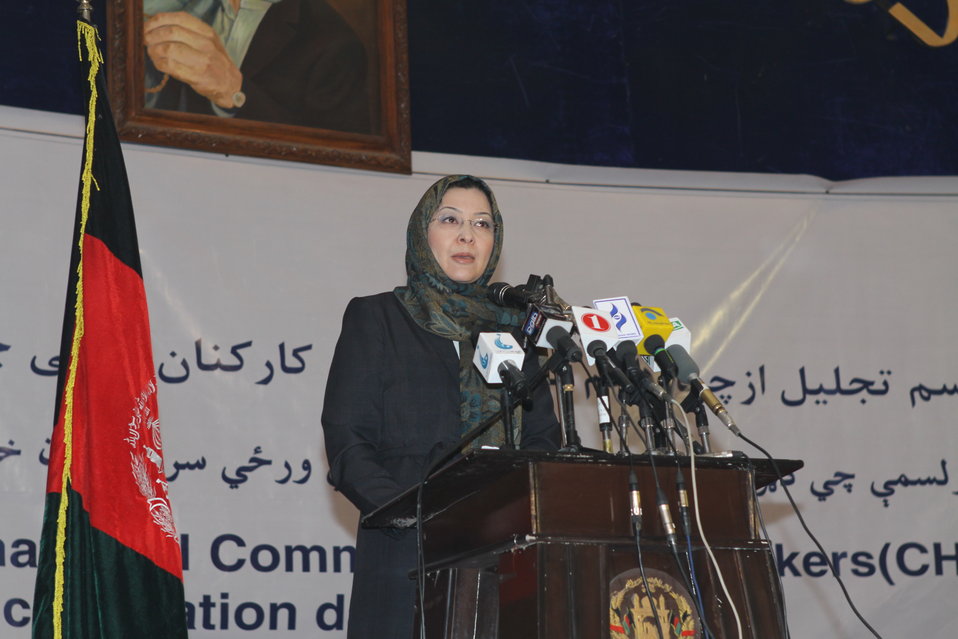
Community Health Workers Celebrated

Kabul, Afghanistan | December 5, 2010 — In support of the United Nations designated International Volunteer Day for Economic and Social Development, Afghanistan’s Ministry of Public Health celebrated its annual Community Health Worker Day today. Acting Minister of Public Health Dr. Suraya Dalil, USAID Senior Deputy Mission Director Robert Hellyer, other government officials, and international donors joined in recognizing the critical contribution of community health workers in Afghanistan and encouraging them to continue their voluntary support to their communities.
The event praised the contributions of the more than 22,000 volunteers throughout the country who deliver community level health-education, counseling, and services out of village health posts located in private homes. The Ministry of Public Health envisioned that community-based healthcare programs will actively encourage communities and families to adopt healthy lifestyles and behaviors, and provide families access to high quality and socially acceptable preventative medicine and life-saving services.
“We have 22,000 community health workers in Afghanistan that are able to implement the basic and standard medicines. They all have been trained through a job description,” said Minister Dalil. Addressing the health workers, she added, “I am proud and feel powerful that I have people like you.”
USAID-funded health projects collaborate closely with the Ministry of Public Health to improve the health and nutritional status of Afghans, provide quality primary healthcare, and promote healthy behaviors at the community and household-levels. USAID supported the training of more than 9,000 of the volunteer community health workers currently working in Afghanistan.
“On behalf of the American people, I congratulate the Community Health Workers for their diligence to gain the skills and knowledge necessary to serve their communities in this important role,” said USAID Senior Deputy Mission Director Hellyer. “USAID strongly supports community based health care and believes that quality community-based health services are essential to reaching Afghanistan’s Millennium Development Goals.”
To support the Basic Package of Health Services, USAID assisted in developing the community health worker training manual, helped train community health worker supervisors and master-trainers, facilitated in-service training, and produced and developed reporting tools, job aids, and education materials.